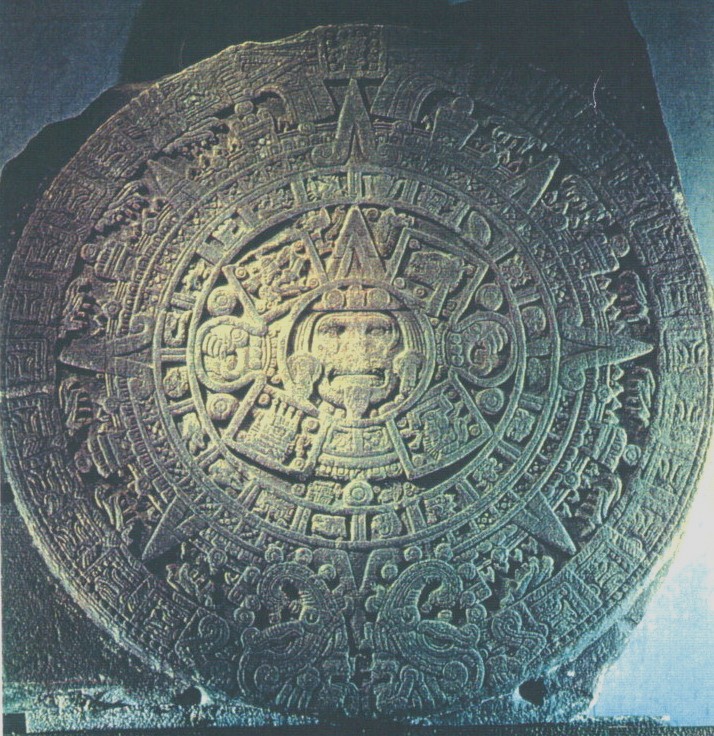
Photograph taken in the Museum of Anthropology and History in Mexico City, 1996 Español: Fotografía realizada en el Museo de Antropología e Historia en la Ciudad de México, 1996 Português: Fotografia realizada no Museu de Antropologia e História da Cidade do México em 1996